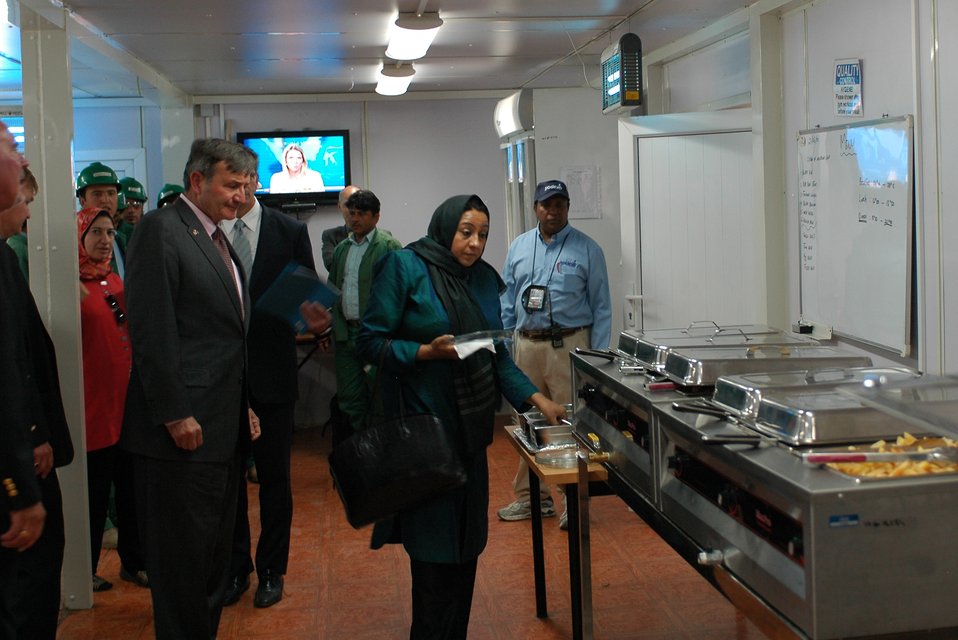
105 MW Tarakhil Power Plant Handover